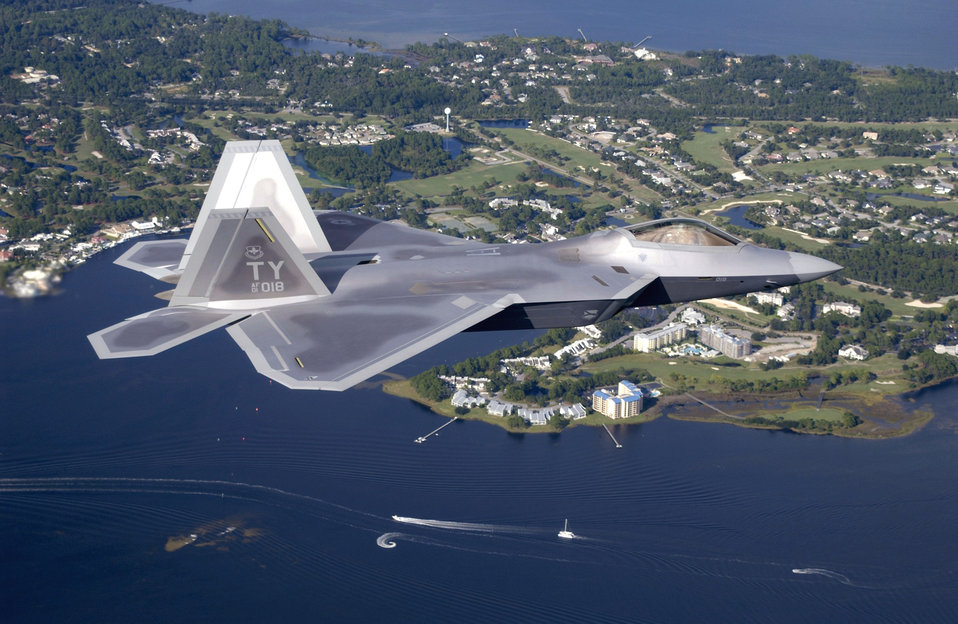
Cruising over Florida

TYNDALL AIR FORCE BASE, Fla. -- The first operational F/A-22 Raptor cruises over Florida on its delivery flight to Tyndall, home of the world's first Raptor squadron.